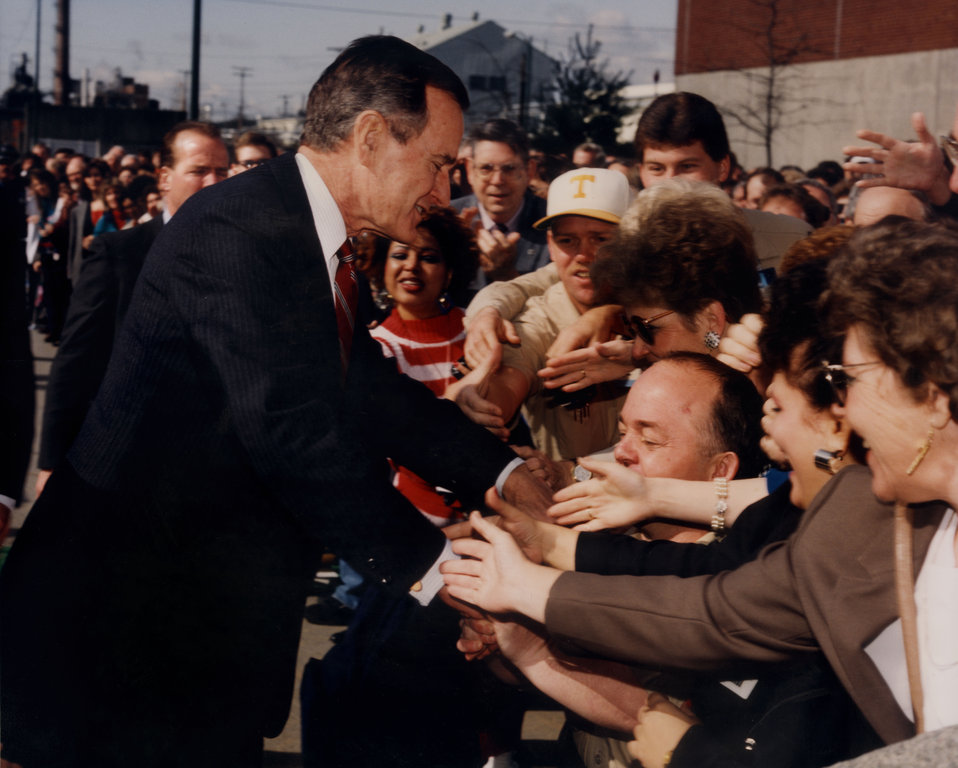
President George Bush visit to Oak Ridge National Lab.

92-136 DOE photo by Frank Hoffman
President George Bush visit to Oak Ridge National Lab. Oak Ridge Tennessee 2-19-1992